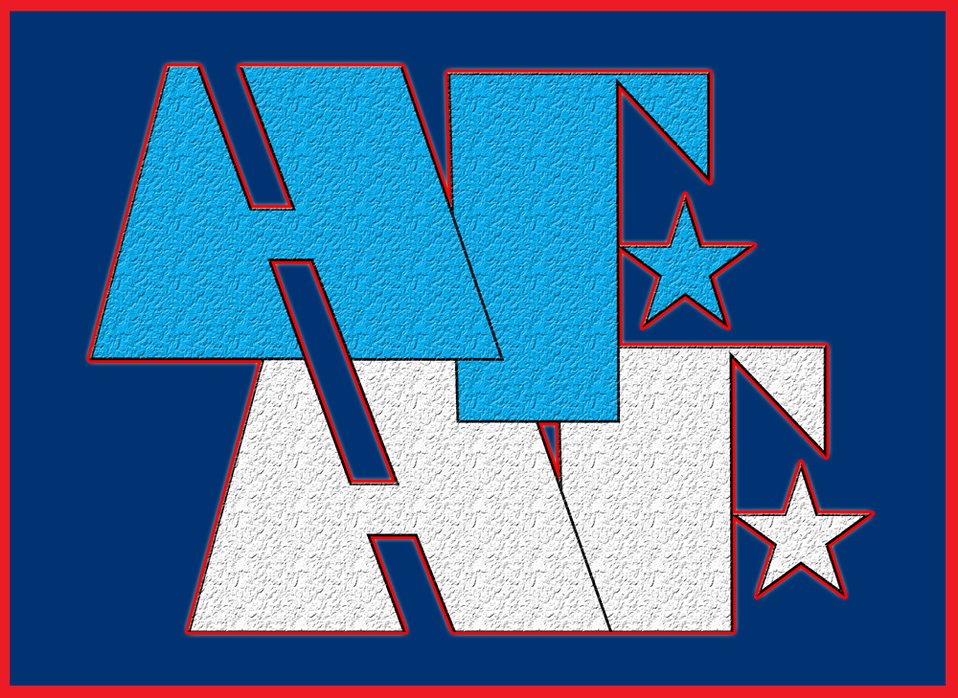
AFAF campaign

People can contribute to the Air Force Assistance Fund through cash, check, money order or payroll deduction to the following organizations: the Air Force Aid Society, the Air Force Enlisted Village, the Air Force Villages and the General and Mrs. Curtis E. LeMay Foundation.